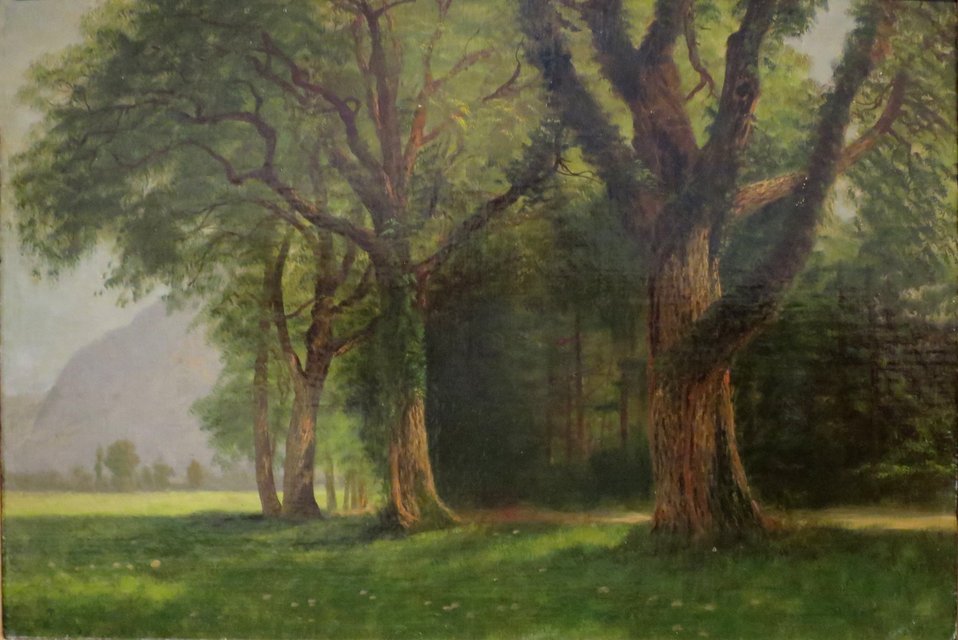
'In the Valley of the Yosemite' by Albert Bierstadt, 1872, oil on canvas, Honolulu Museum of Art